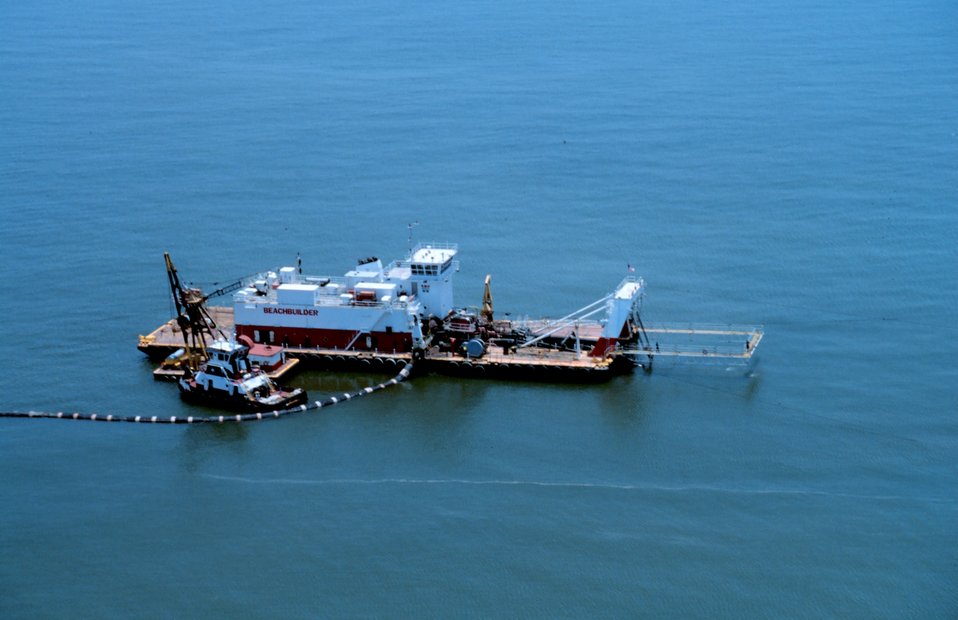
An aerial close-up view of the 'Beach Builder'.